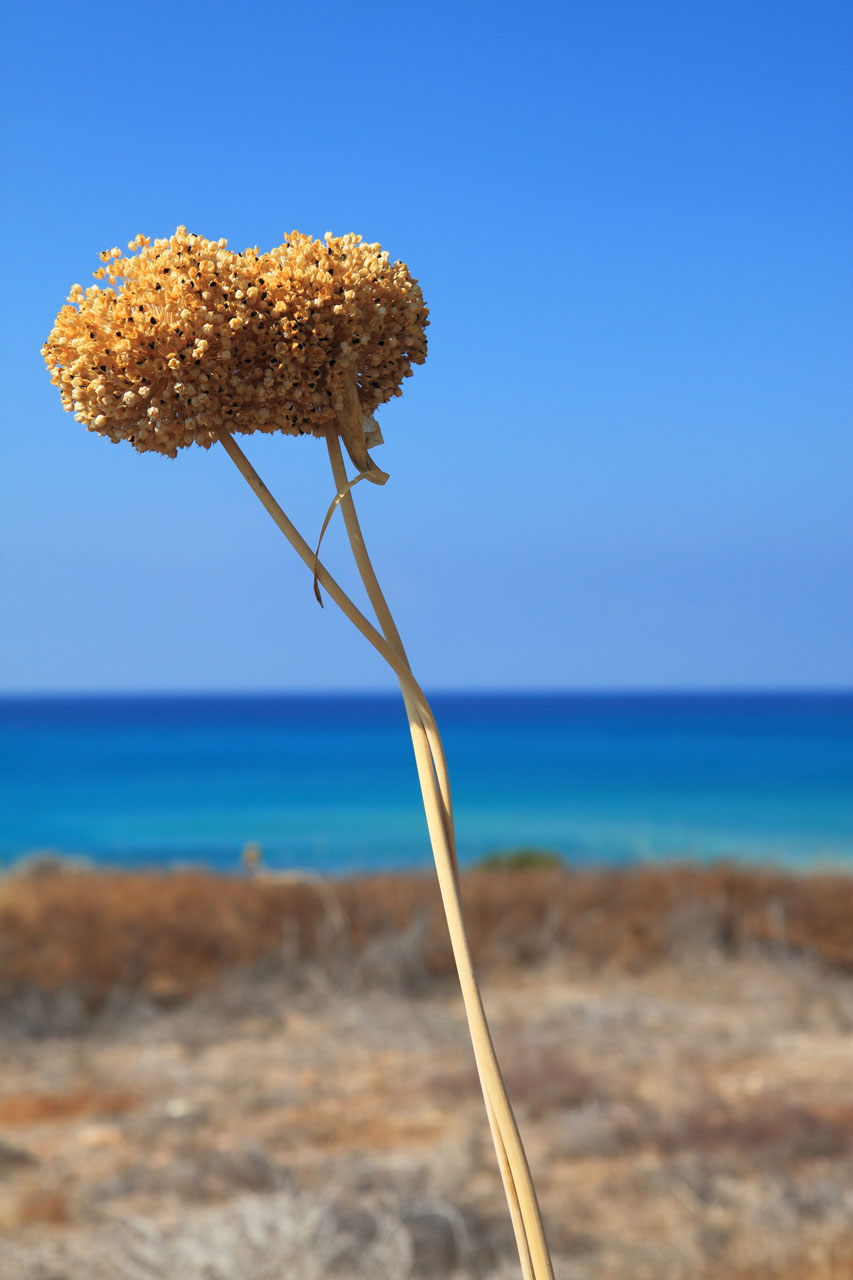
Dry plant and blue sea.